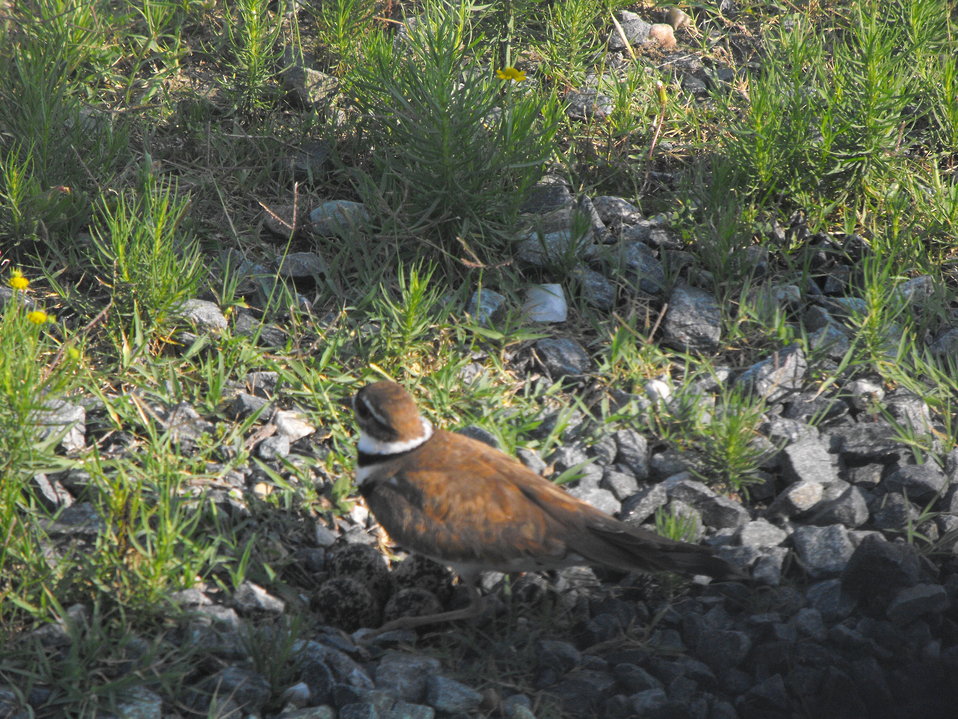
Killdeer protecting nest

A killdeer hovers over its eggs laid in the gravel off the Service Road at Chincoteague National Wildlife Refuge.